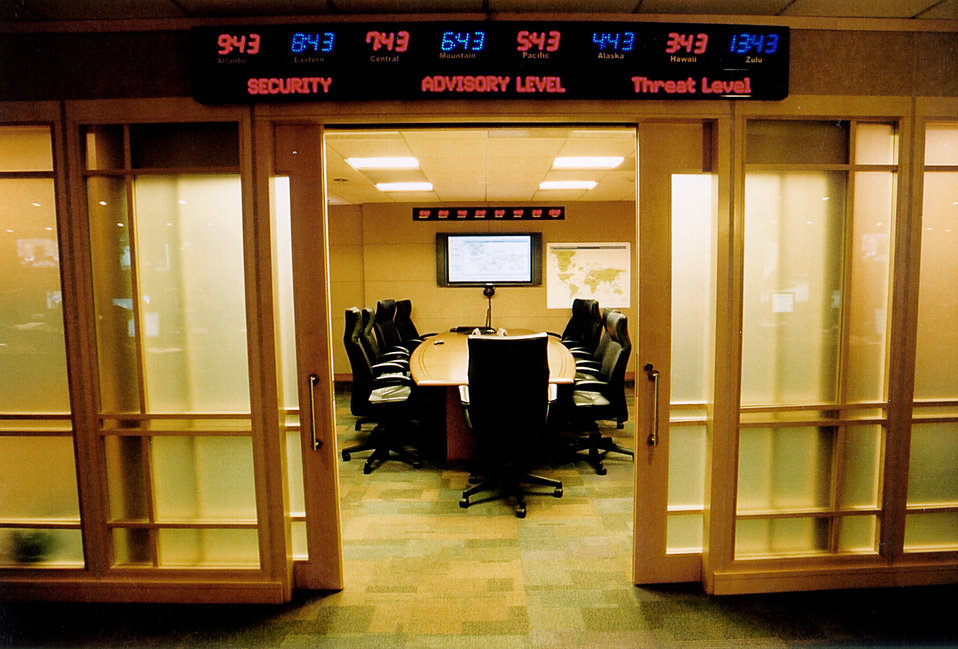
This is a conference room inside CDC's new Emergency Operations Center (EOC).